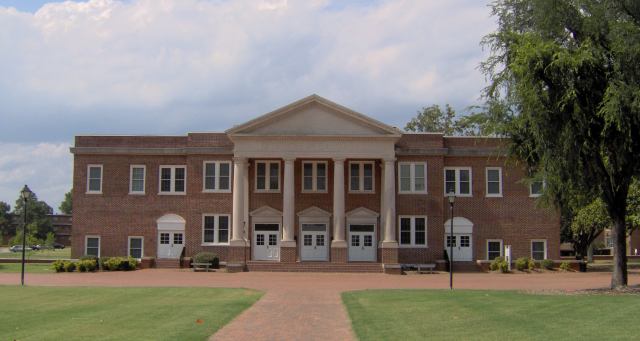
Photograph of D. Rich Memorial Building at Campbell University